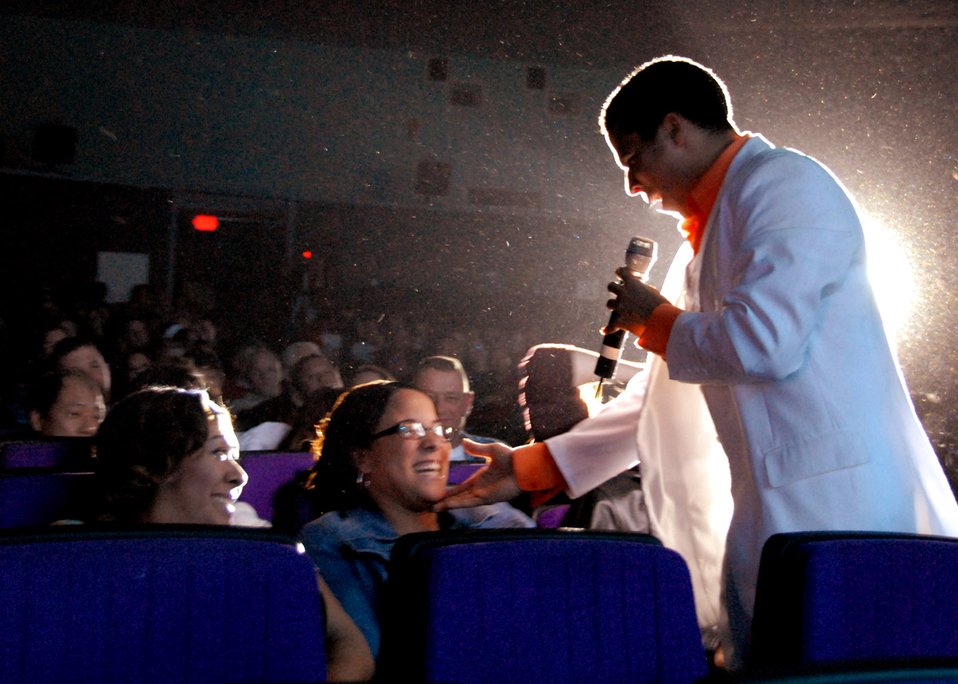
Tops In Blue performs at Osan

Airman 1st Class Jesse Cox performs during Tops In Blue's annual world tour celebrating